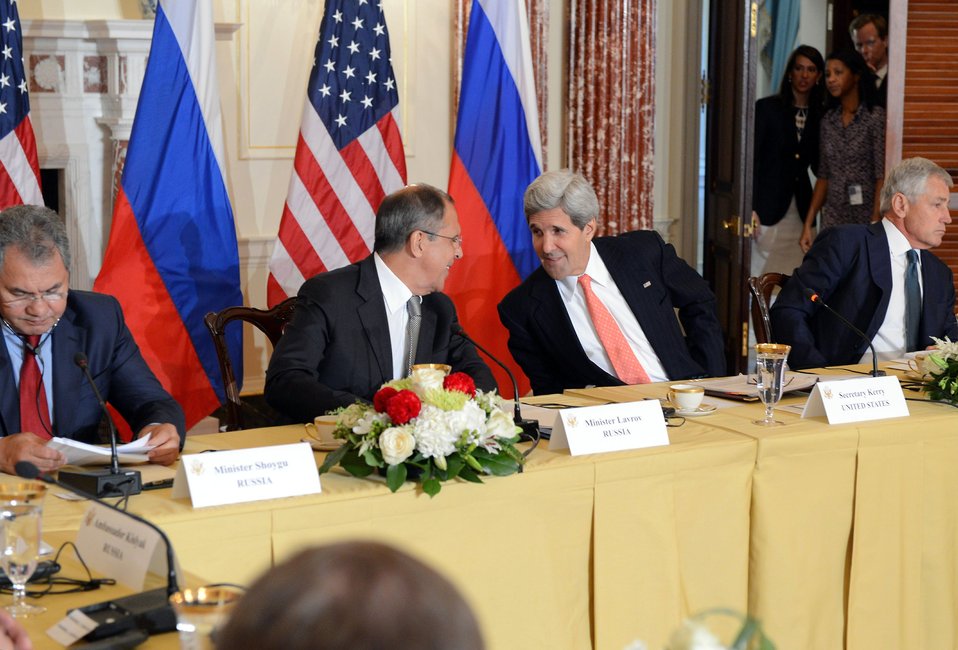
Secretaries Kerry and Hagel Meet With Russian Ministers Lavrov and Shoygu

U.S. Secretary of State John Kerry and U.S. Secretary of Defense Chuck Hagel meet with Russian Foreign Minister Sergey Lavrov and Russian Defense Minister Sergey Shoygu at the U.S. Department of State in Washington, D.C., on August 9, 2013.